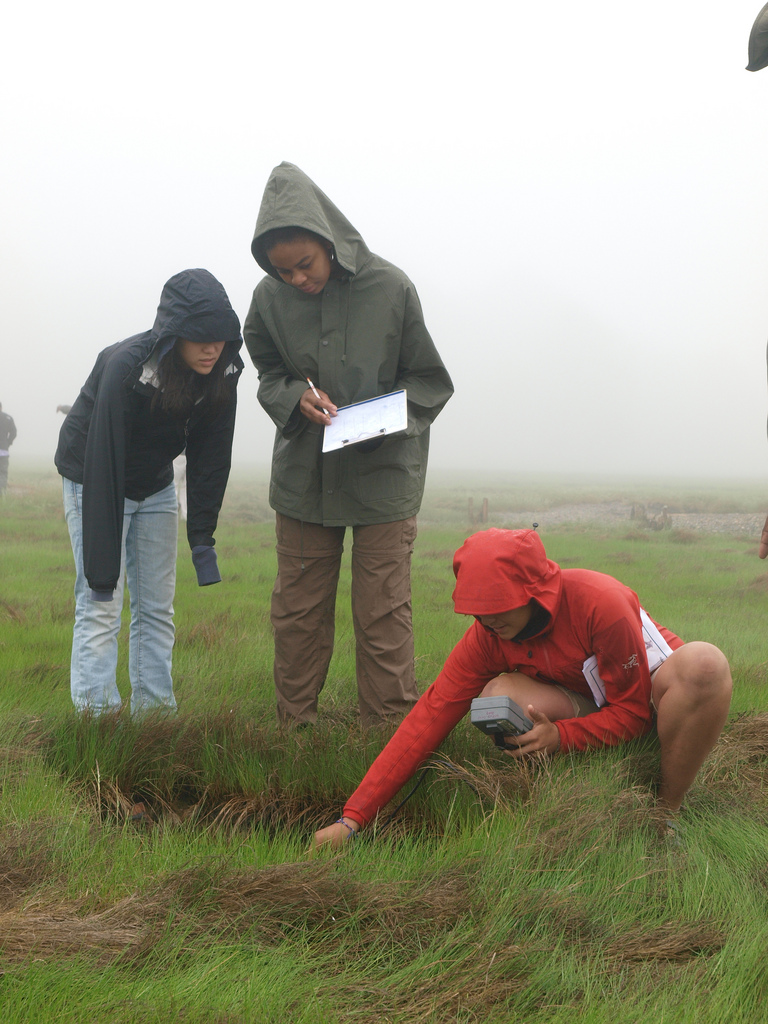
CIP students in the field

U.S. Fish and Wildlife Service